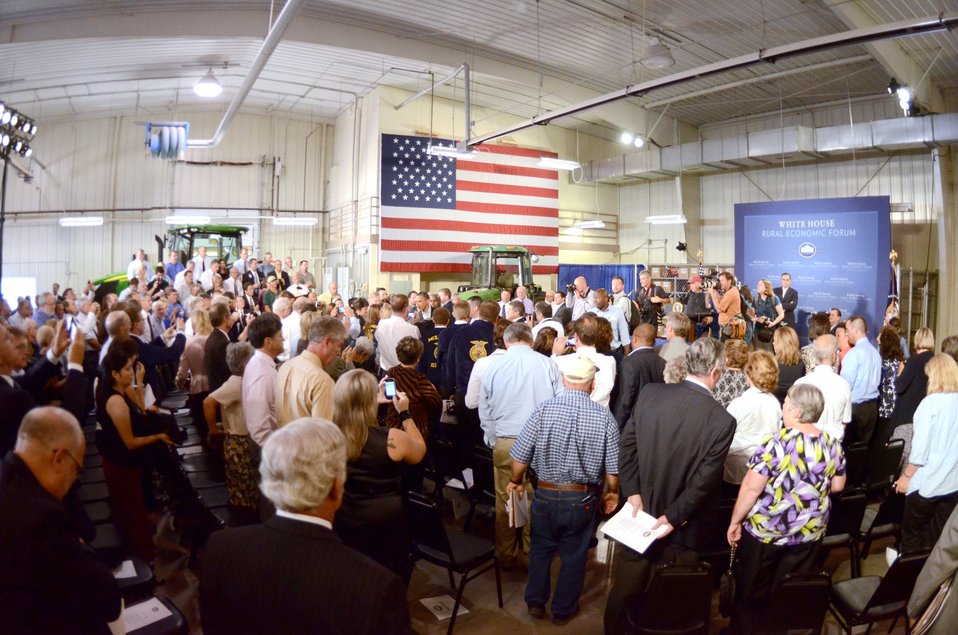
President Barack Obama shakes hands with members of the audience at the Northeast Iowa Community College, for a White House Rural Economic Forum on Tuesday, Aug. 16, 2011. The President’s visit will focus on agriculture’s contribution to the national economy, and how to create more jobs in rural America.